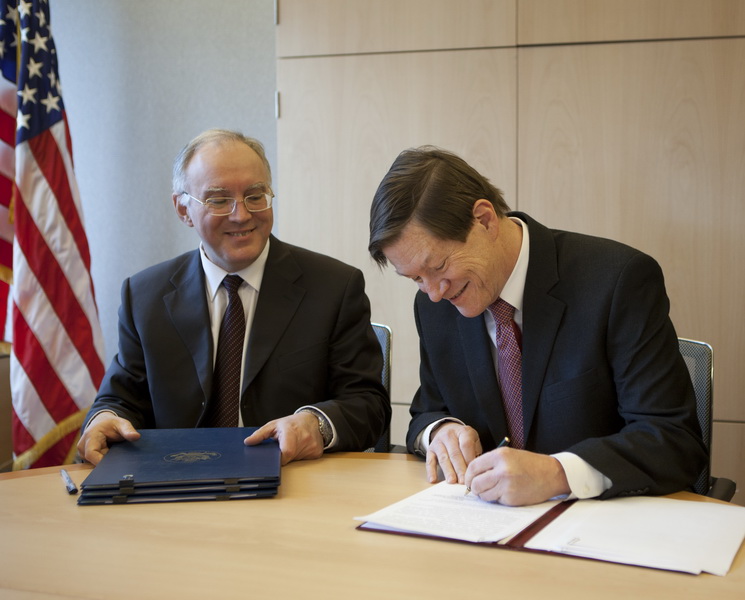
John Ordway and Vladimir Leontyev, Heads of U.S. and Russian Delegations, Sign Agreements on the Sharing of Telemetric Information

Head of the Russian delegation, Vladimir Leontyev, left; and Head of the U.S. delegation, John Ordway, right; sign agreements on the sharing of telemetric information during the third session of the Bilateral Consultative Commission Under the New START Treaty in Geneva, Switzerland, on February 7th, 2012.